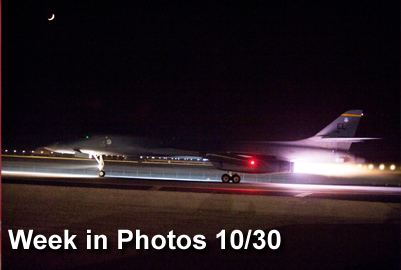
Week in Photos

Air Force Week in Photos for Oct. 30 highlights photos from around the Air Force. In this photo by Staff Sgt. Robert Barney, a B1-B Lancer takes off from an air base in Southwest Asia Oct. 21, 2009, on a combat mission.